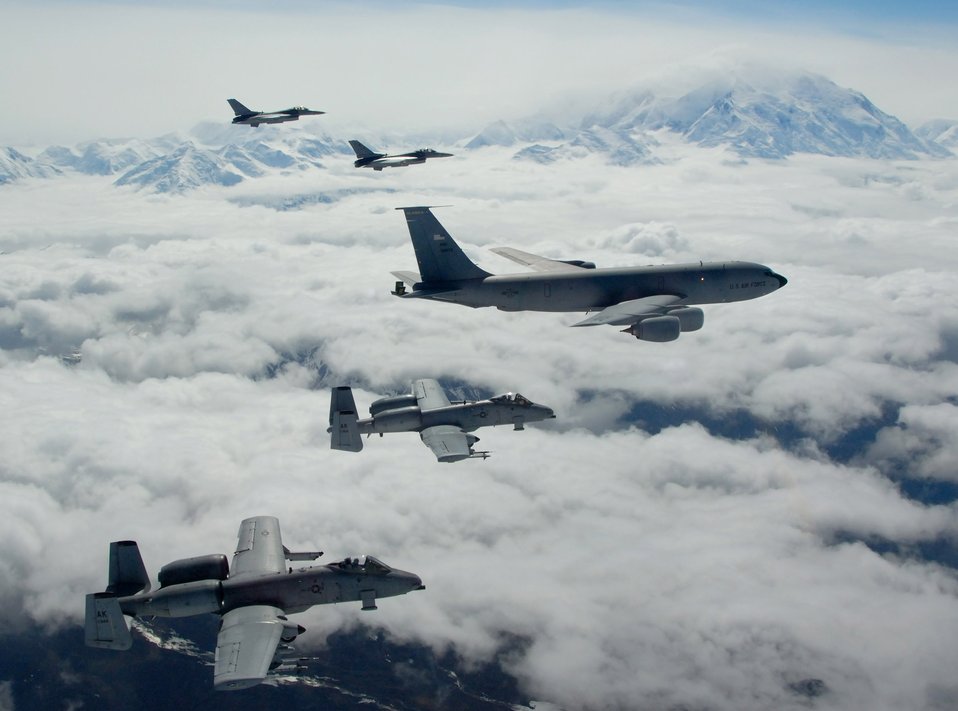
Final flight for fighters

A KC-135 Stratotanker with the Alaska Air National Guard's 168th Air Refueling Wing flies with two F-16 Fighting Falcons from the 18th Fighter Squadron and two A-10 Thunderbolt IIs from the 355th Fighter Squadron May 29 over Alaska. The five aircraft assigned to Eielson Air Force Base, Alaska, flew in formation for the last time due to the deactivation of the 18th and 355th Fighter Squadrons.